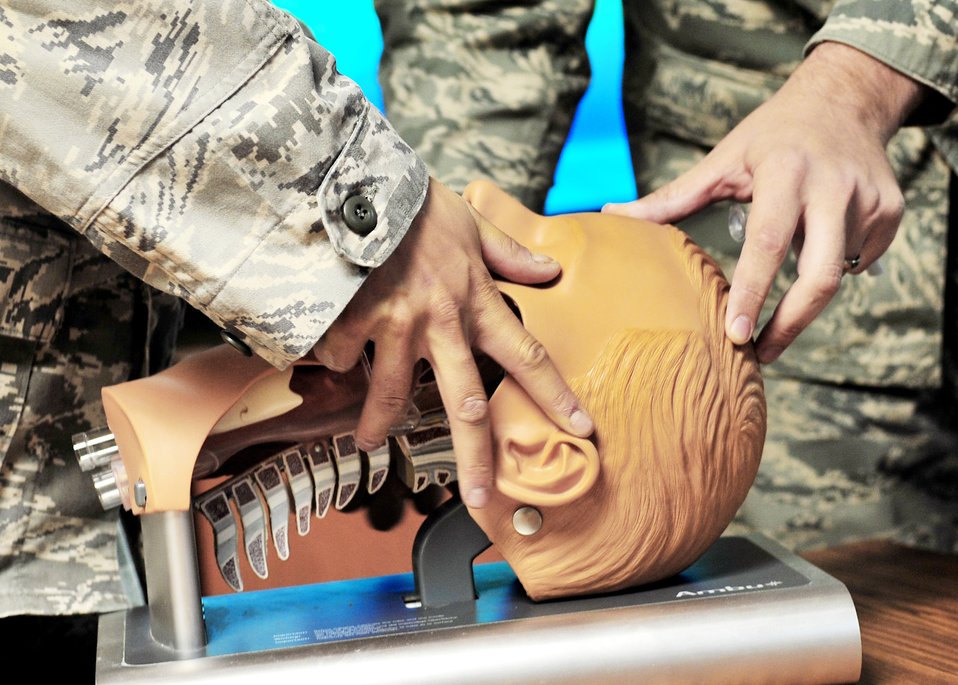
Kadena Airmen train to 'survive'

During a